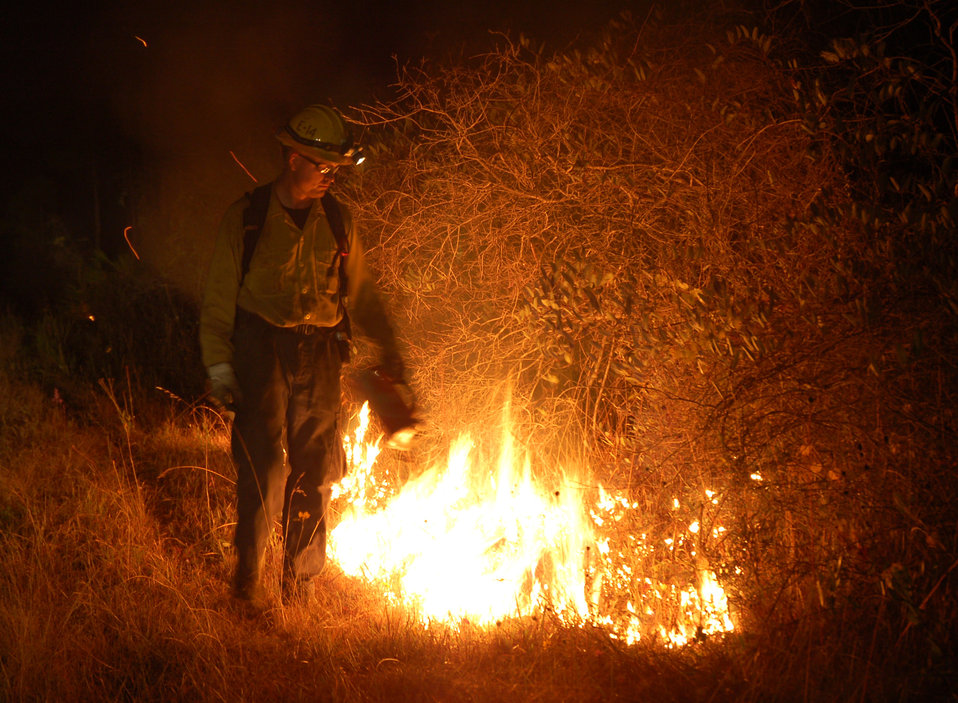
Fighting fire with fire

Carl Goodwin ignites underbrush and monitors the flames recently near the Enlisted Club at Tyndall Air Force Base, Fla. Mr. Goodwin is with the U.S. Forest Service. Tyndall AFB members train members of federal agencies from across the nation in the art of prescribed burning, wildfire suppression and ecological regeneration through controlled burns.